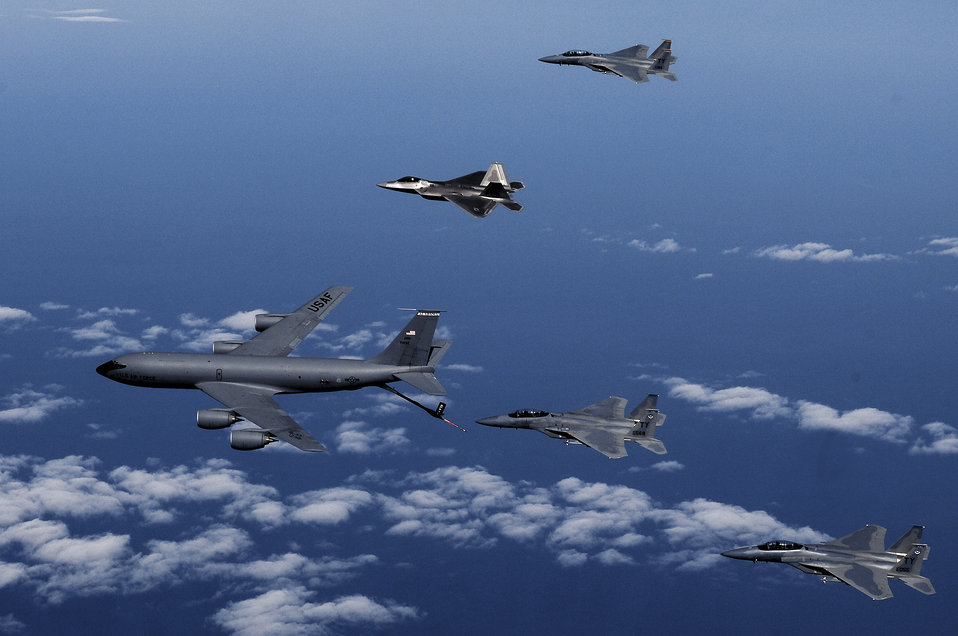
Flying gas station

F-15 Eagles and an F-22 Raptor from the 325th Fighter Wing at Tyndall Air Force Base, Fla., participate in an aerial refueling mission with a KC-135 Stratotanker from the 117th Air Refueling Wing at Birmingham, Ala.